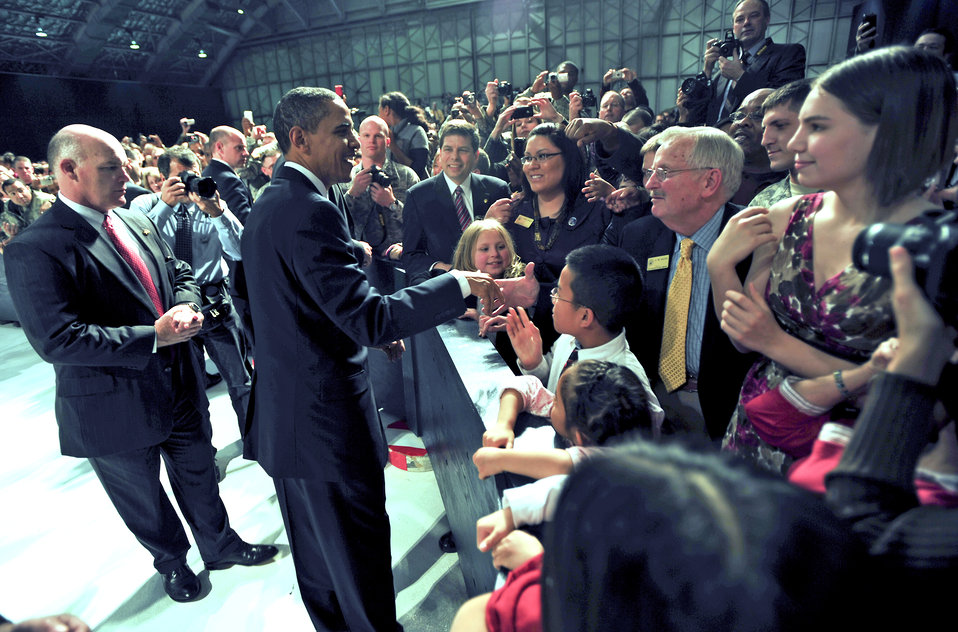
President visits Elmendorf Airmen

President Barack Obama shakes hands with military personnel and civilians during his visit Nov. 12, 2009, to Elmendorf Air Force Base, Alaska. The president was at the base to meet with servicemembers and offer remarks to the local community.